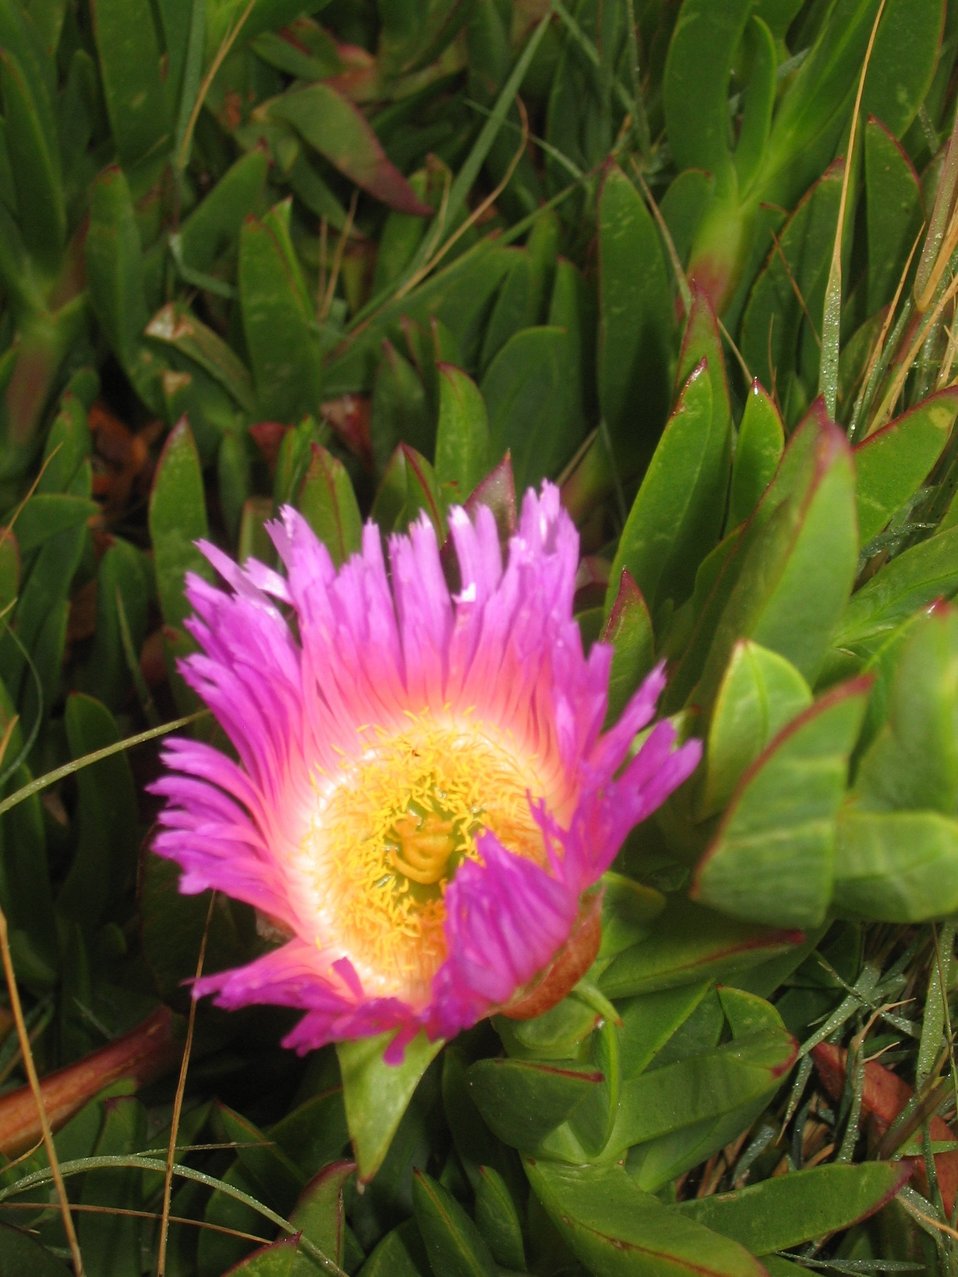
Pink and yellow iceplant flower (Carpobrotus edulis)